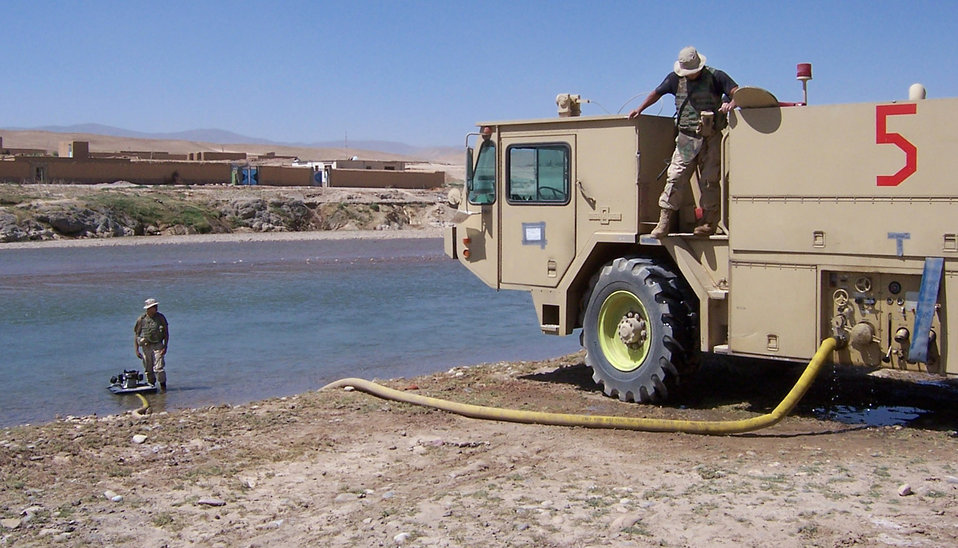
Firefighters

CHAGCHARAN, Afghanistan (AFPN) -- Senior Airmen Victor Cardenas and Michael Sandoval refill the water tanks on their fire truck from a local stream near Chaghcharan, Afghanistan. The Airmen are part of a six-man fire rescue team assigned to the air field. The team -- the only one of its kind in Afghanistan -- provides rapid-reaction airfield rescue and fire-fighting capability. They provided fire protection for the Lithuanian Provincial Reconstruction Team. Both Airmen deployed from Ramstein Air Force Base, Germany.